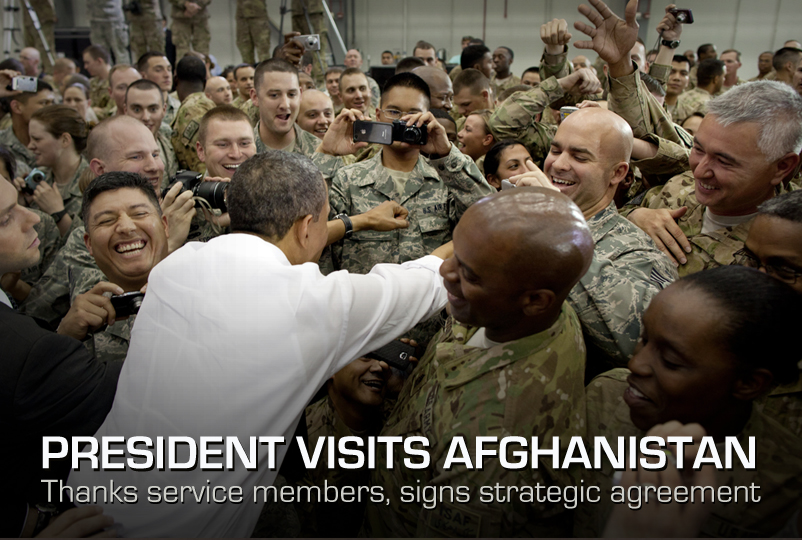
President Visits Afghanistan